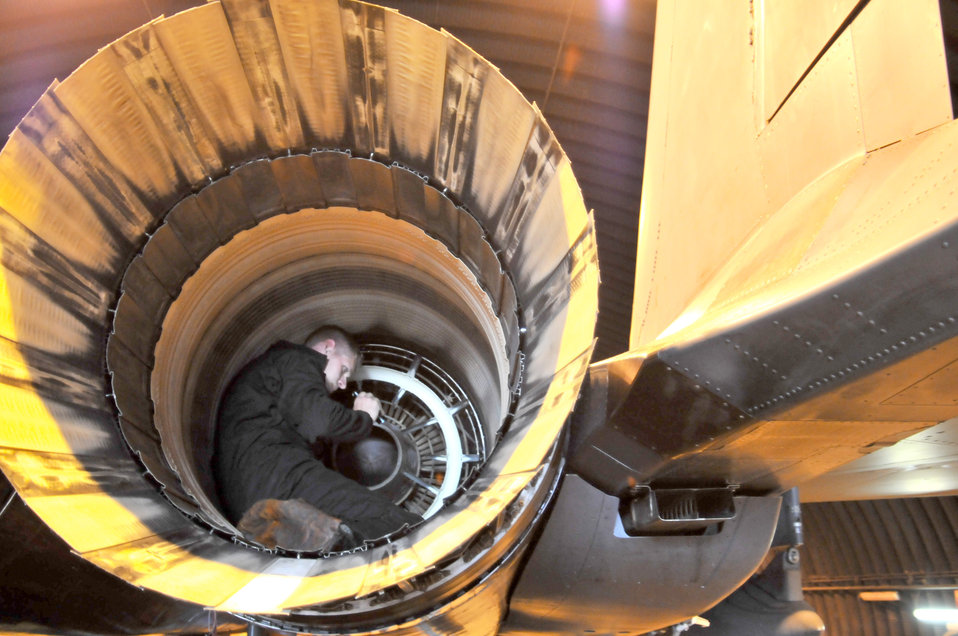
Lakenheath set-piece demonstration

Staff Sgt. Jason Siler inspects the exhaust panels of an F-15E Strike Eagle during a set-piece demonstration Oct. 7, 2010, at Royal Air Force Lakenheath, England. A five-man team was tasked with regenerating an aircraft within three hours in preparation for the NATO Tactical Evaluation. Sergeant Siler is a member of the 48th Maintenance Group.